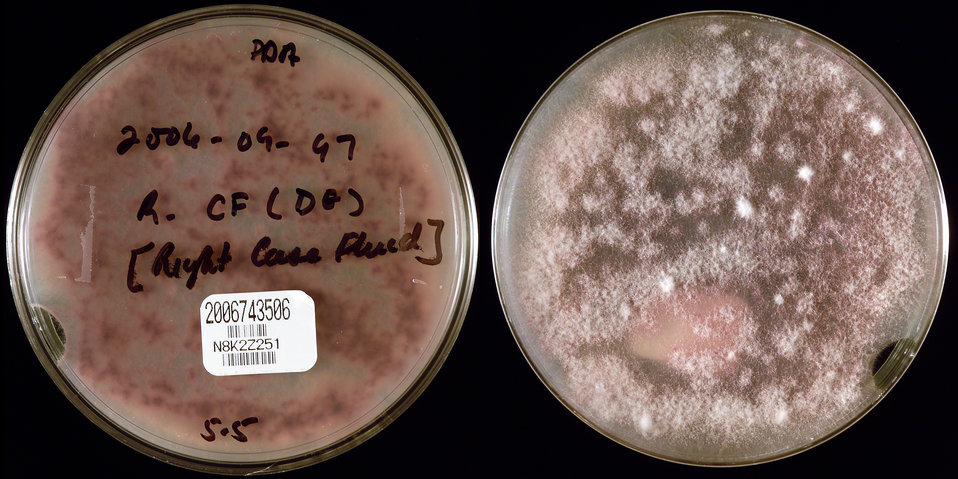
This image depicted two sides of a Petri dish, which had been inoculated with a specimens retrieved from the fluid from the inside of the right side of a contact lens case, from a Connecticut Fusarium keratitis-patient, and had subsequently grown a filamentous colony of Fusarium oxysporum fungal organisms. The type of agar medium in the case of this specimen was Potato Dextrose. While it is not unusual for Fusarium to cause keratitis, it was the number of affected individuals, which had increased dramatically, predominantly in persons wearing contact lenses, that had warranted this epidemiologic study. The laboratory received cultures which came from two sources: Fusarium spp. isolated from the eyes of patients with fungal keratitis, and cultures from contact lenses, cases and/or lens solution.